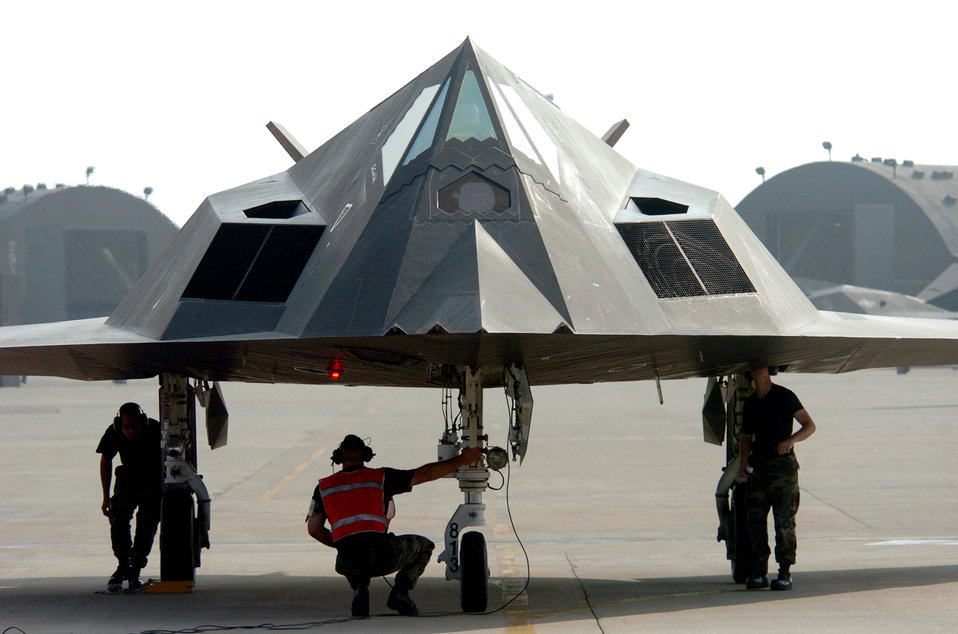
Nighthawk check

KUNSAN AIR BASE, South Korea -- Airmen from the 49th Maintenance Squadron, Holloman Air Force Base, N.M., conduct an end of runway check on an F-117 Nighthawk fighter. About 300 Airmen from Holloman AFB are currently deployed here supporting operations in the Pacific Region.